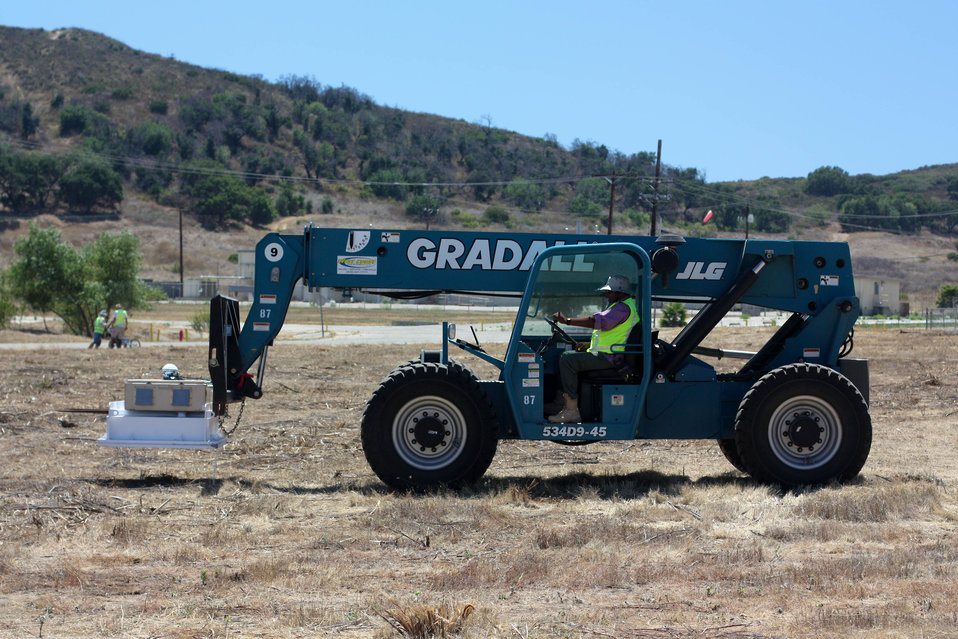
ETEC

Photo taken at the Energy Technology Engineering Center (ETEC).